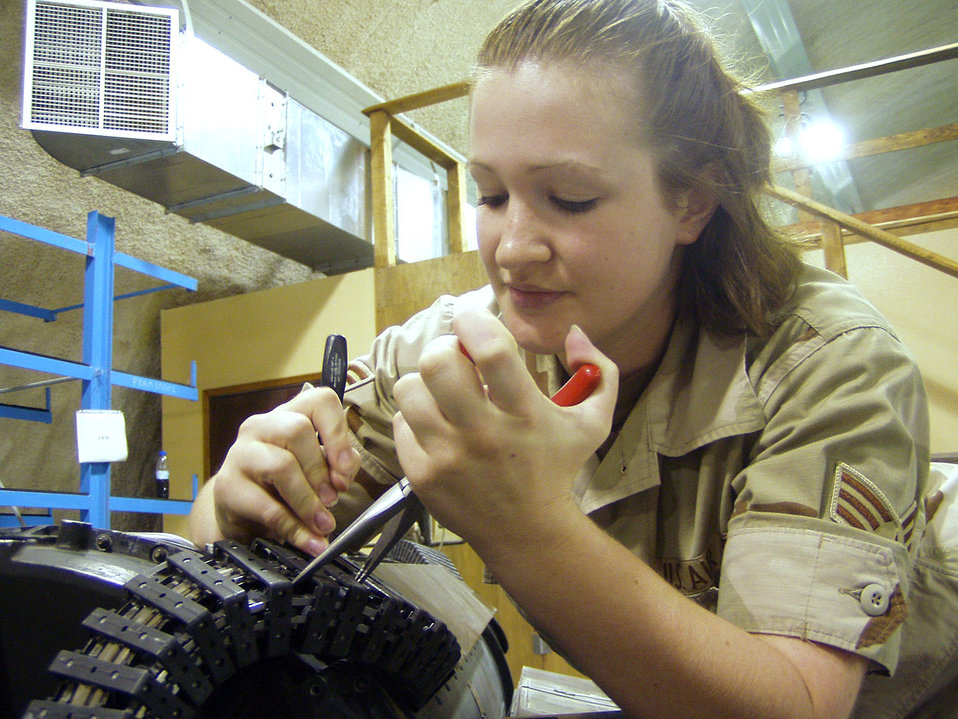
Loader up

SOUTHWEST ASIA -- Senior Airman Christina Fiet verifies proper installation of element return chutes in an ammunition loader at a forward-deployed location. It is used to load 20 mm ammunition into F-15 Eagle and F-16 Fighting Falcon internal gun systems and can hold enough ammunition for about three aircraft. Environmental conditions in the desert require Airmen from the armament flight to inspect the loader every 45 days. Airman Fiet is deployed from the 122nd Fighter Wing at Fort Wayne Air National Guard Base, Ind.